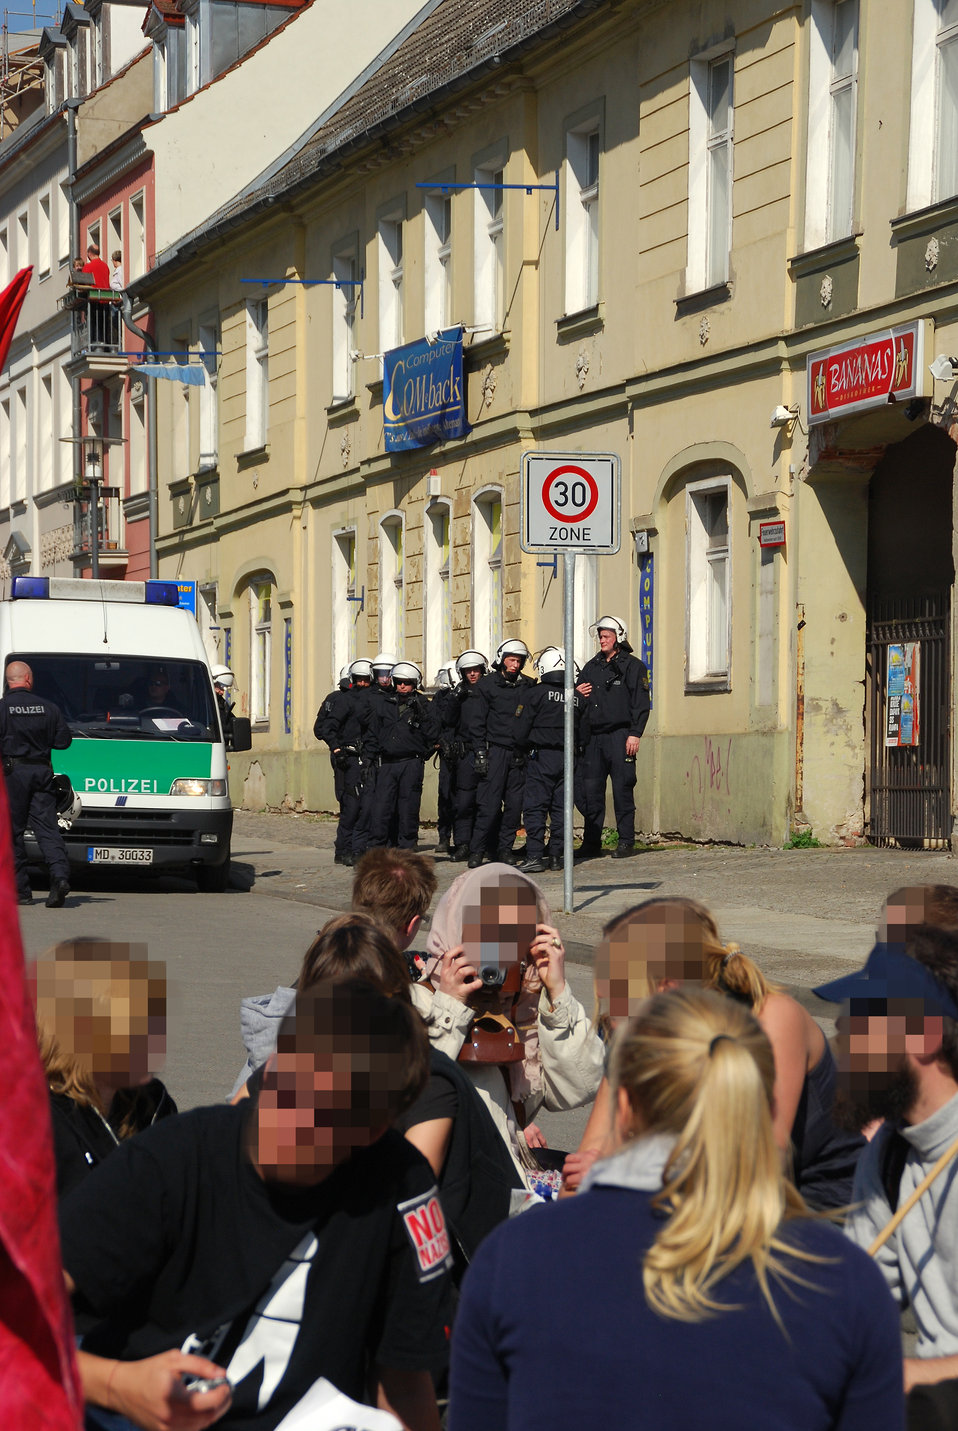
Proteste gegen den Nazi-Aufmarsch am 24.3.2012 in Frankfurt (Oder)